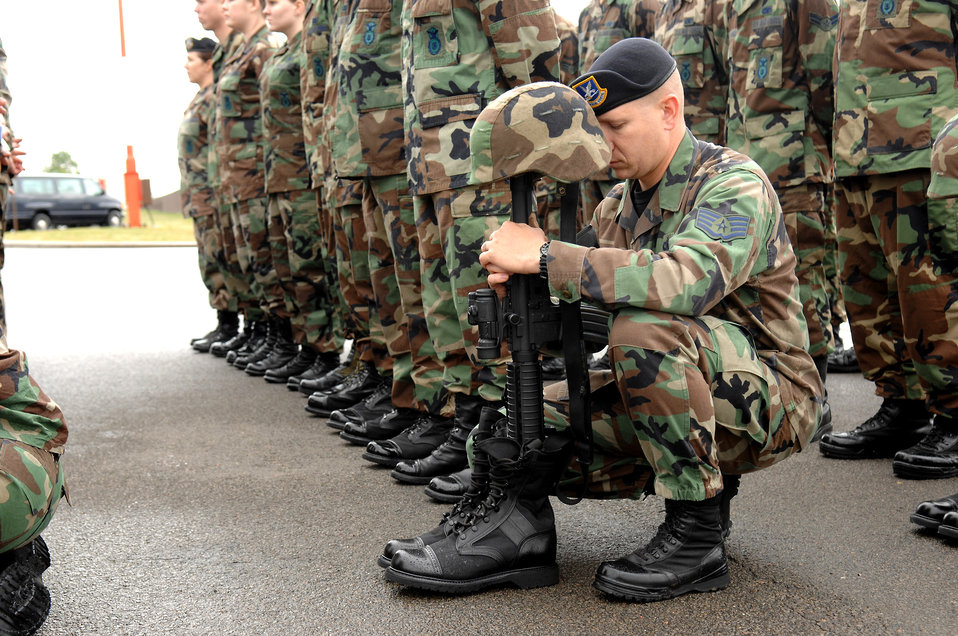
Ramstein security forces honor fallen comrades

Staff Sgt. Robert Culbertson kneels in respect for a fellow airman during the Last Guard Mount ceremony May 16 at Ramstein Air Base, Germany. The Final Guard Mount Ceremony, which recognizes fallen security forces members, was held in conjunction with National Police Week. Sergeant Culbertson is a 435th Security Forces Squadron member.